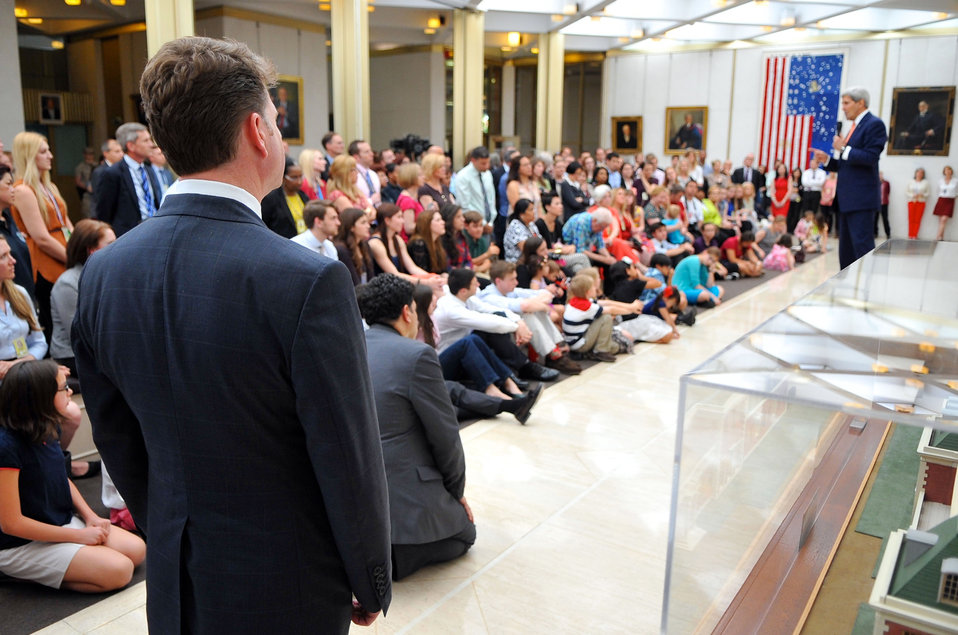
Ambassador Barzun Listens as Secretary Kerry Addresses Embassy London Staff, Family

U.S. Ambassador to the United Kingdom Matthew Barzun listens as U.S. Secretary of State John Kerry addresses the staff, family, and friends of Embassy London during a visit to the United Kingdom on June 13, 2014.